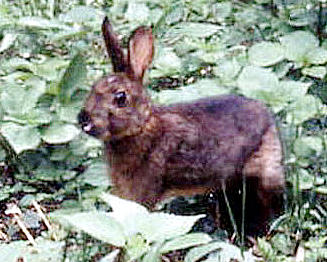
This is an image of a Japanese hare in brown pelage.